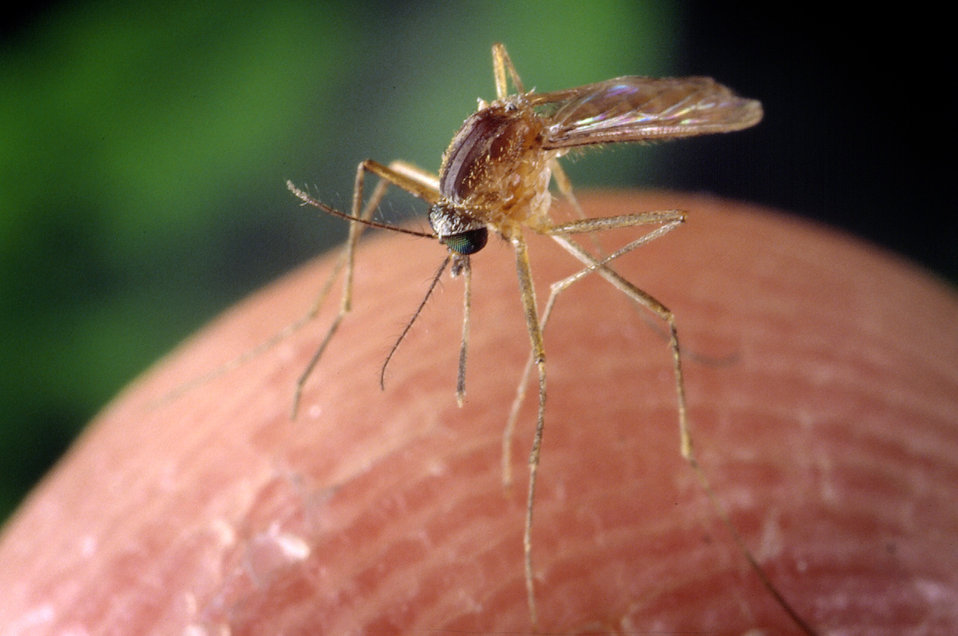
A Culex quinquefasciatus mosquito on a human finger.